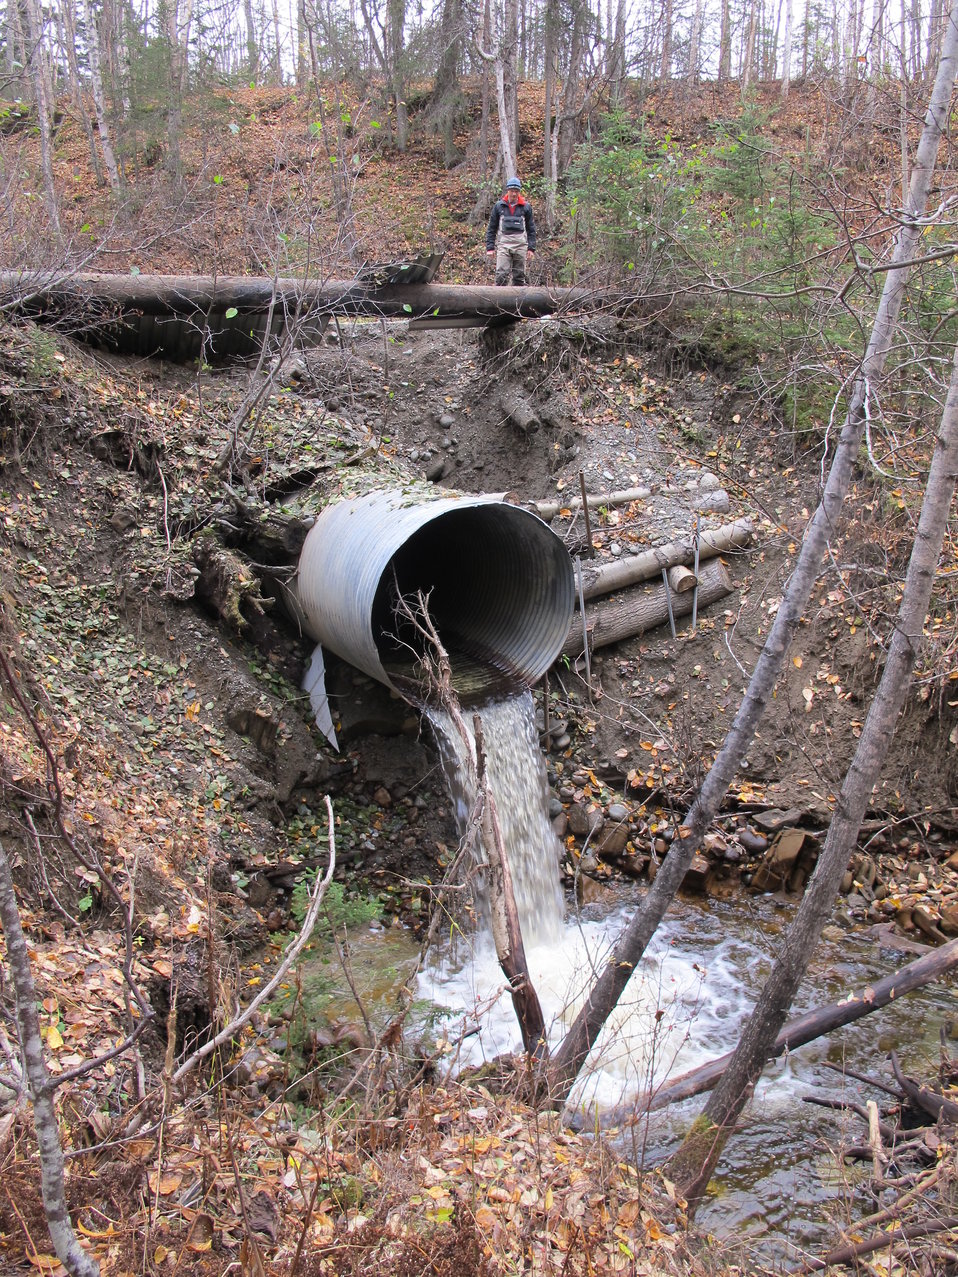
Fish Passage barrier

Service fish passage engineer Bill Rice surveys a fish passage barrier and road
maintenance nightmare from a road that crosses Coal Creek. USFWS/Katrina Mueller